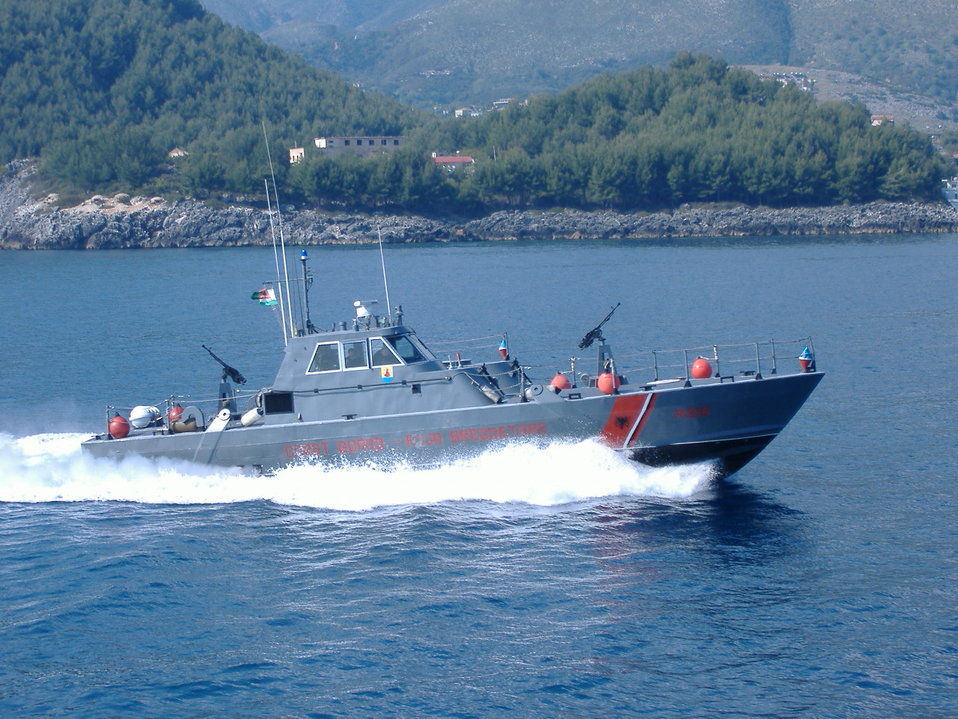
R-215, a US Patrol Boat Sea Spectre Mk III donation to the Albanian Navy Brigade